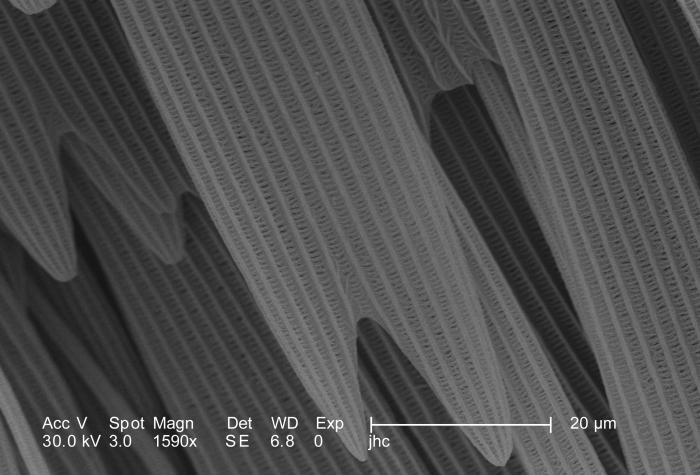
In this relatively highly magnified scanning electron micrographic (SEM) view, some of the wondrous ultrastructural shapes found on the surface of an unidentified white moth were revealed. This moth, discovered deceased in the Decatur, Georgia suburbs, was a member of the Phylum Arthropoda, Order Lepidoptera. At this level of magnification, 1590X, the distal edge of a number of scales could be seen, as well as the diaphanous structure of these adnexae. Imagery such as this brings to life the incredible microscopic beauty, which goes unseen, but is abundant all around us. For another, highly magnified view revealing the proximal end of a single scale, as it inserted into the exoskeletal surface, see PHIL 9841.